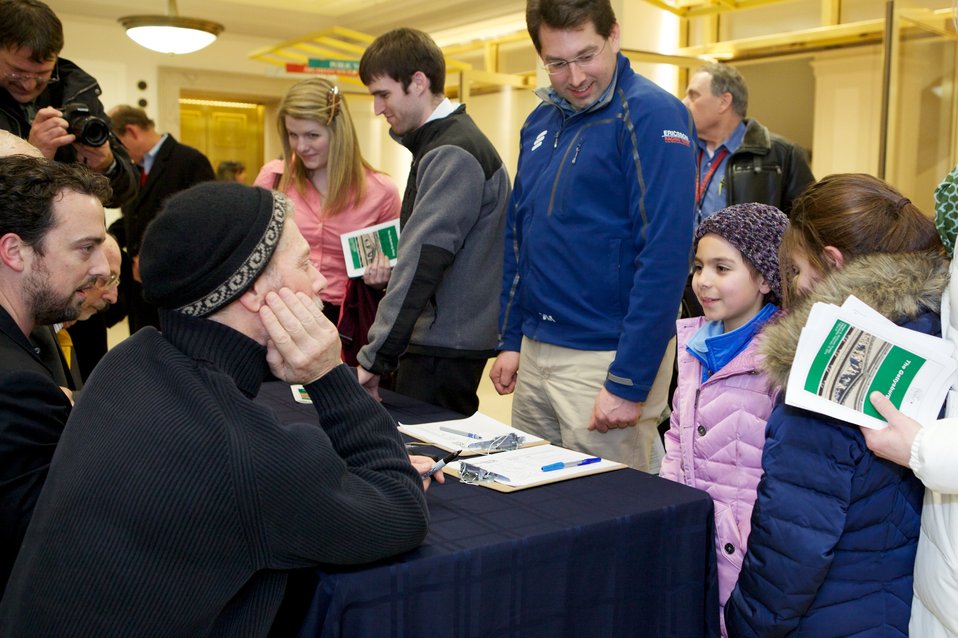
The Gettysburg Story and The Wheatfiled; Stephen Lang (left), actor and playwright, talks with young attendees of the films The Gettysburg Story and The Wheatfield